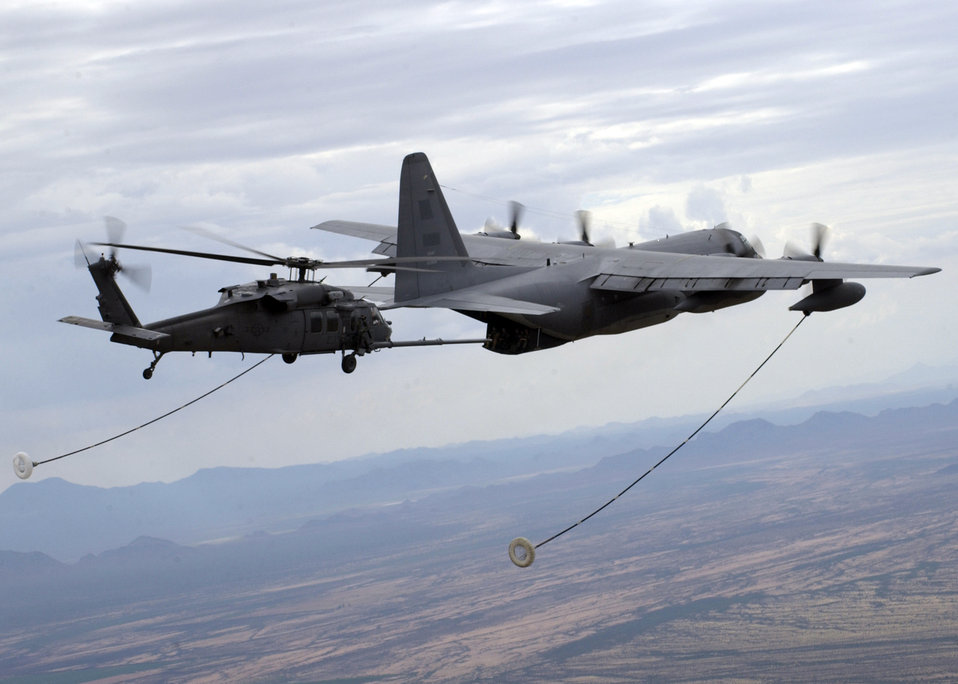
Readying for a rescue

OVER ARIZONA -- An HH-60G Pave Hawk with the 55th Rescue Squadron maneuvers into position to refuel from an HC-130P/N with the 79th Rescue Squadron.